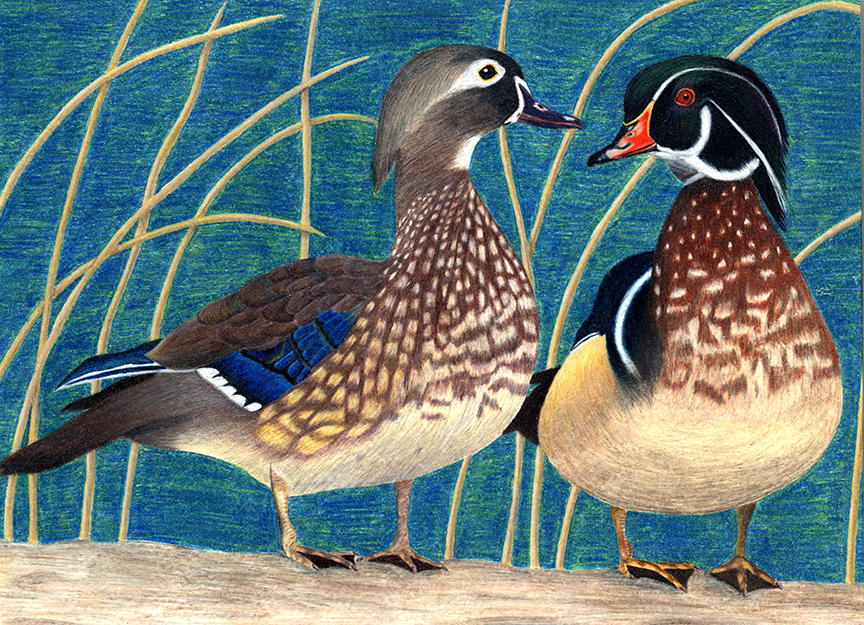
JRDuck2013NE

2013 Junior Duck Stamp Best of Show-Nebraska